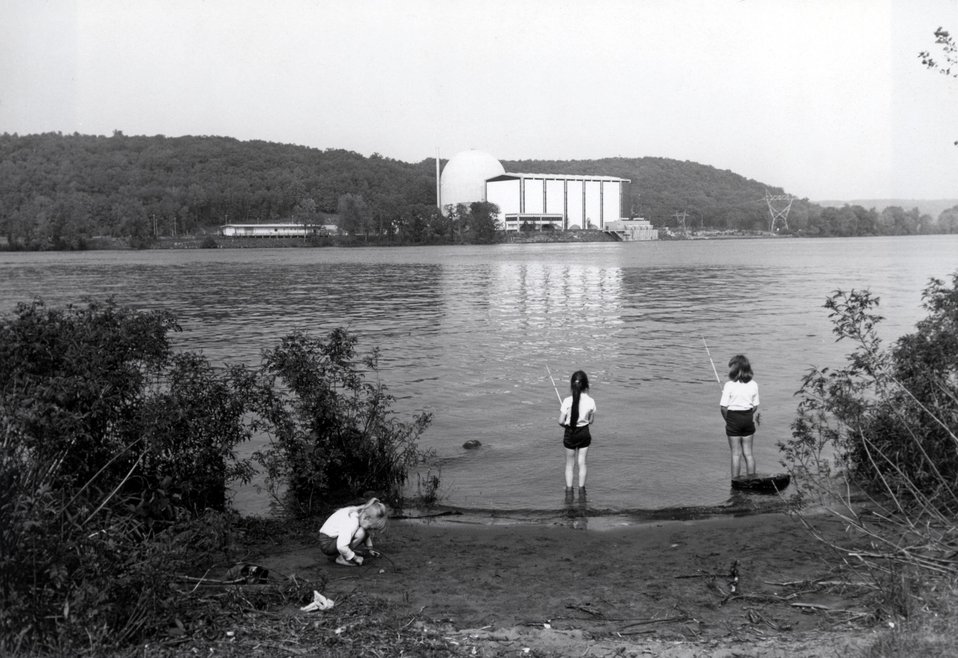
Haddam Neck, largest operating power plant in the U.S.